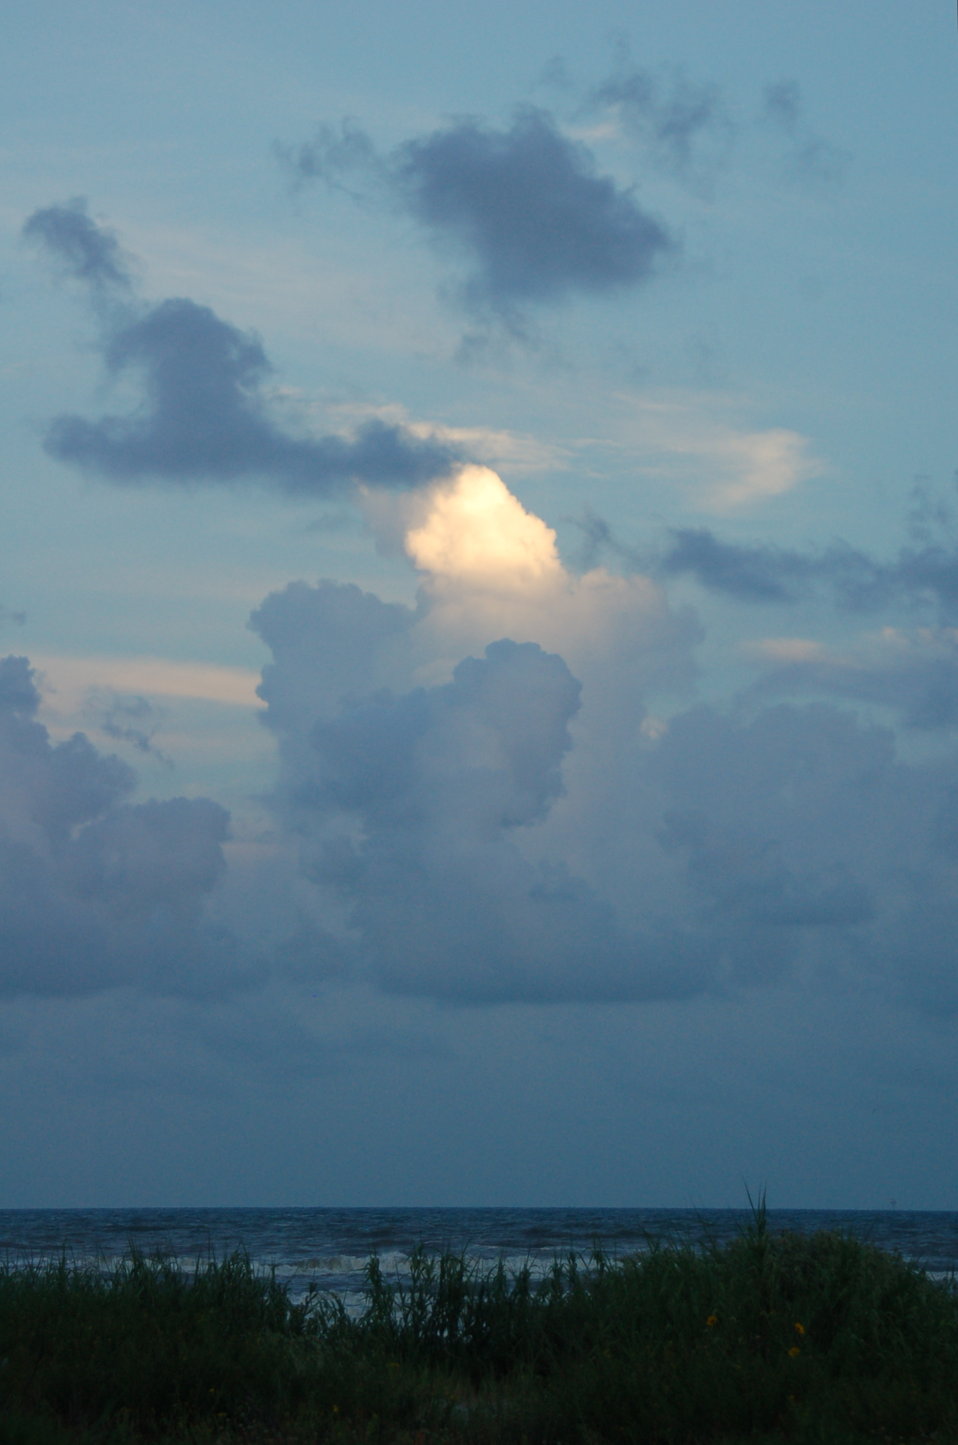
Cloudscape at the beach, Texas